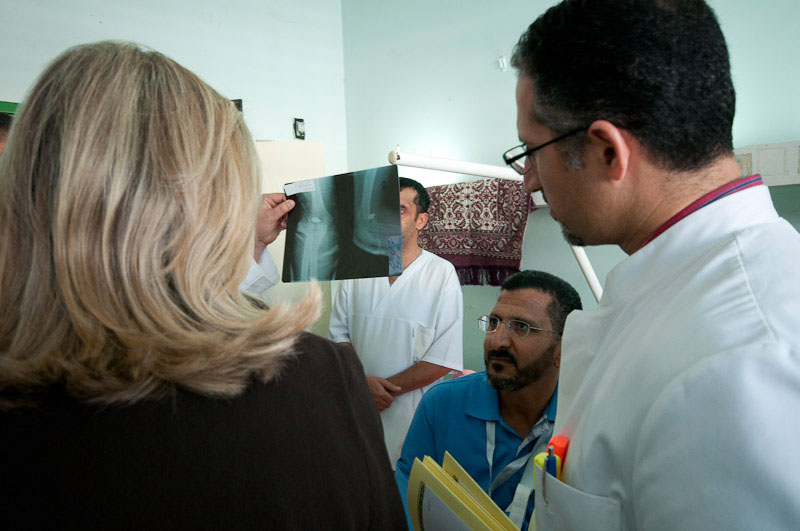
Secretary Clinton Speaks With Doctors Treating Injured Soliders

U.S. Secretary of State Hillary Rodham Clinton speaks with doctors treating injured soldiers during her visit to a hospital in Tripoli, Libya, on October 18, 2011.